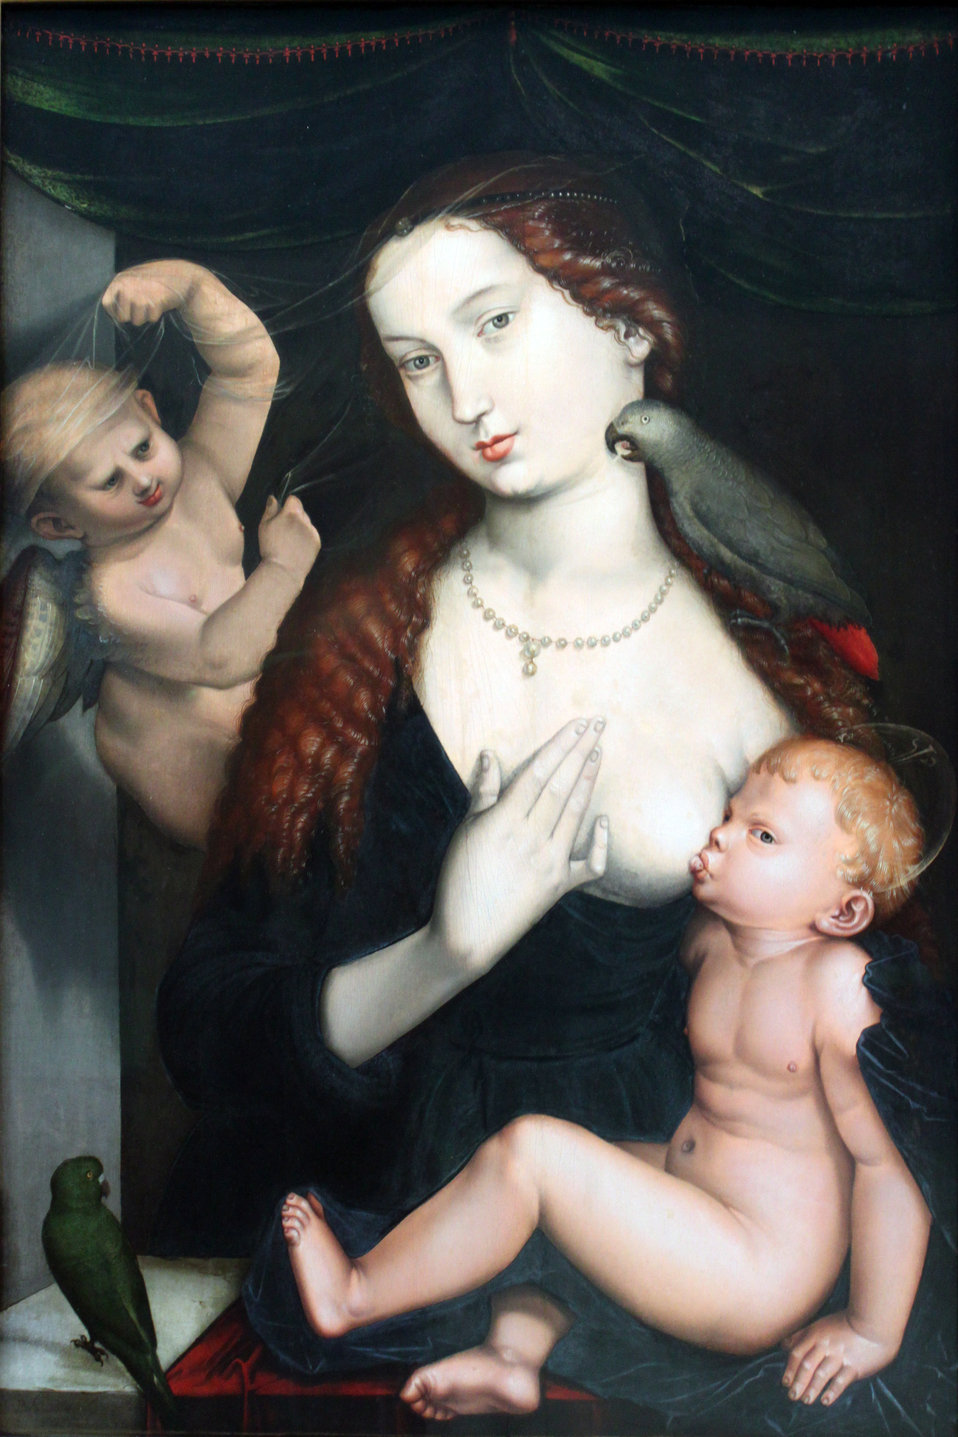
1533 Baldung Maria mit Kind und Papageien anagoria